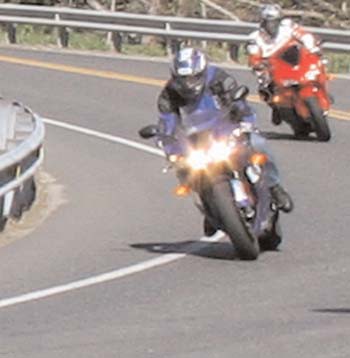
Eye in the sky protects ground forces

BALAD AIR BASE, Iraq -- Senior Airman Christopher Sipes inspects an MQ-1 Predator unmanned aerial vehicle's multispectral targeting system ball. He is assigned to the 46th Aircraft Maintenance Unit here.